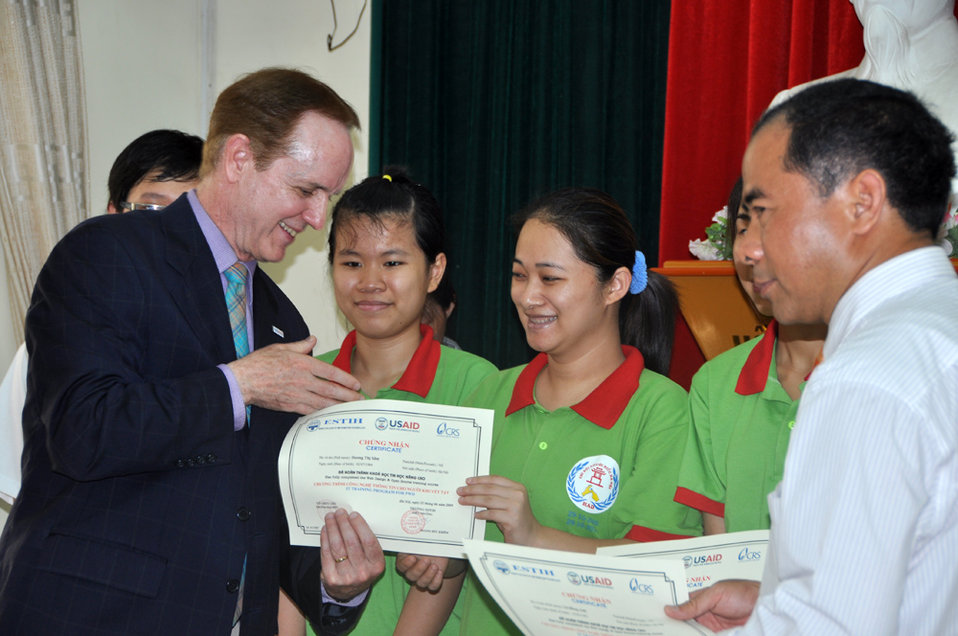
USAID Mission Director Francis Donovan participate in graduation of IT students in Hanoi on June 22, 2011.